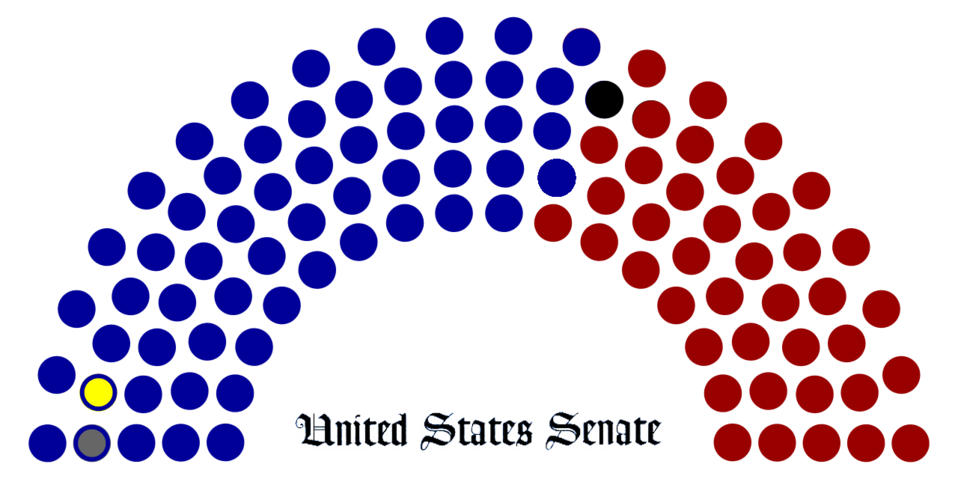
Breakdown of political party representation in the United States Senate during the 111th Congress.
Blue: Democrat
Red: Republican
Blue/Yellow: Independent Democrat (caucused with Democrats)
Blue/Gray: Independent (caucused with Democrats)
Black Unresolved